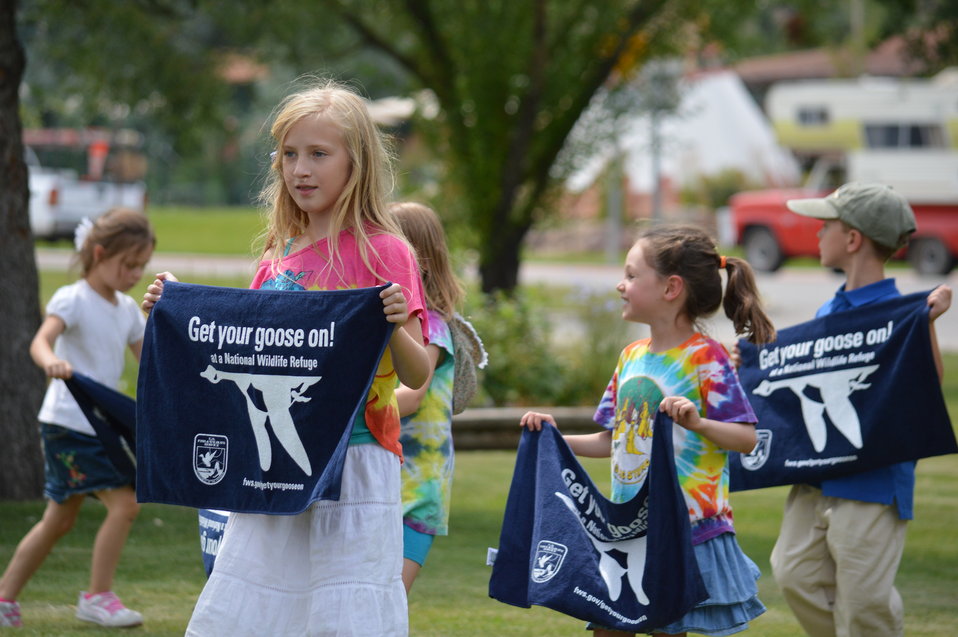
Get Your Goose On! - National Elk Refuge Style

On August 10, 2012 the U.S. Fish and Wildlife Service and Partners celebrated the 100 year anniversary of the establishment of the National Elk Refuge. In these photos, young attendees, along with Puddles the Blue Goose and the National Elk Refuge's mascot, showed us how to Get Your Goose On! with style.